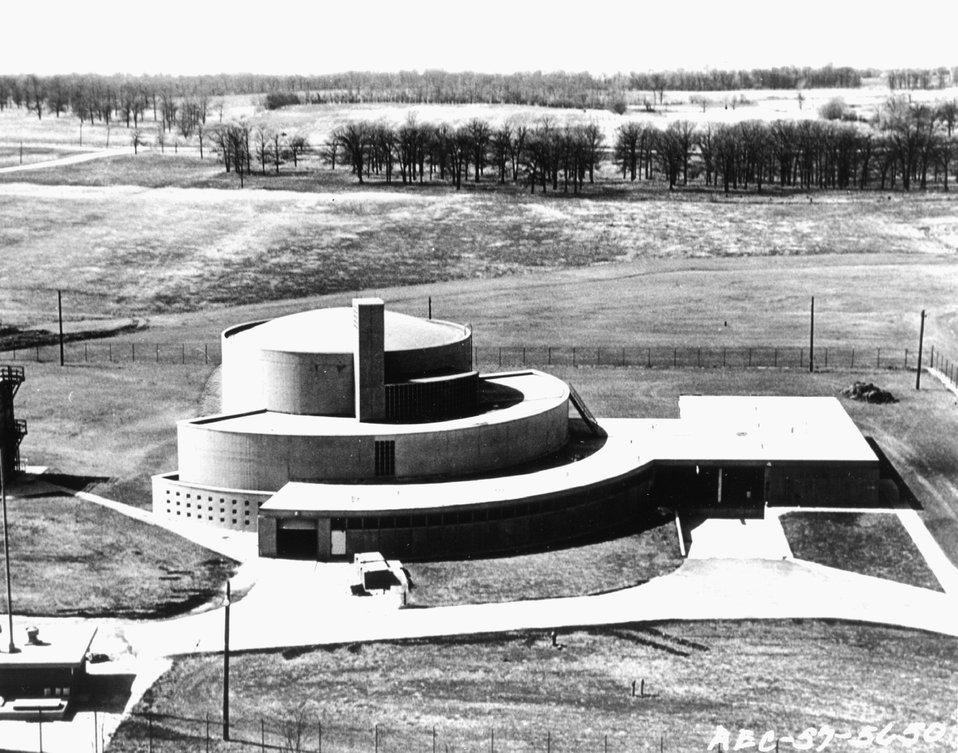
Aerial view of Argonne research reactor building. c. 1957